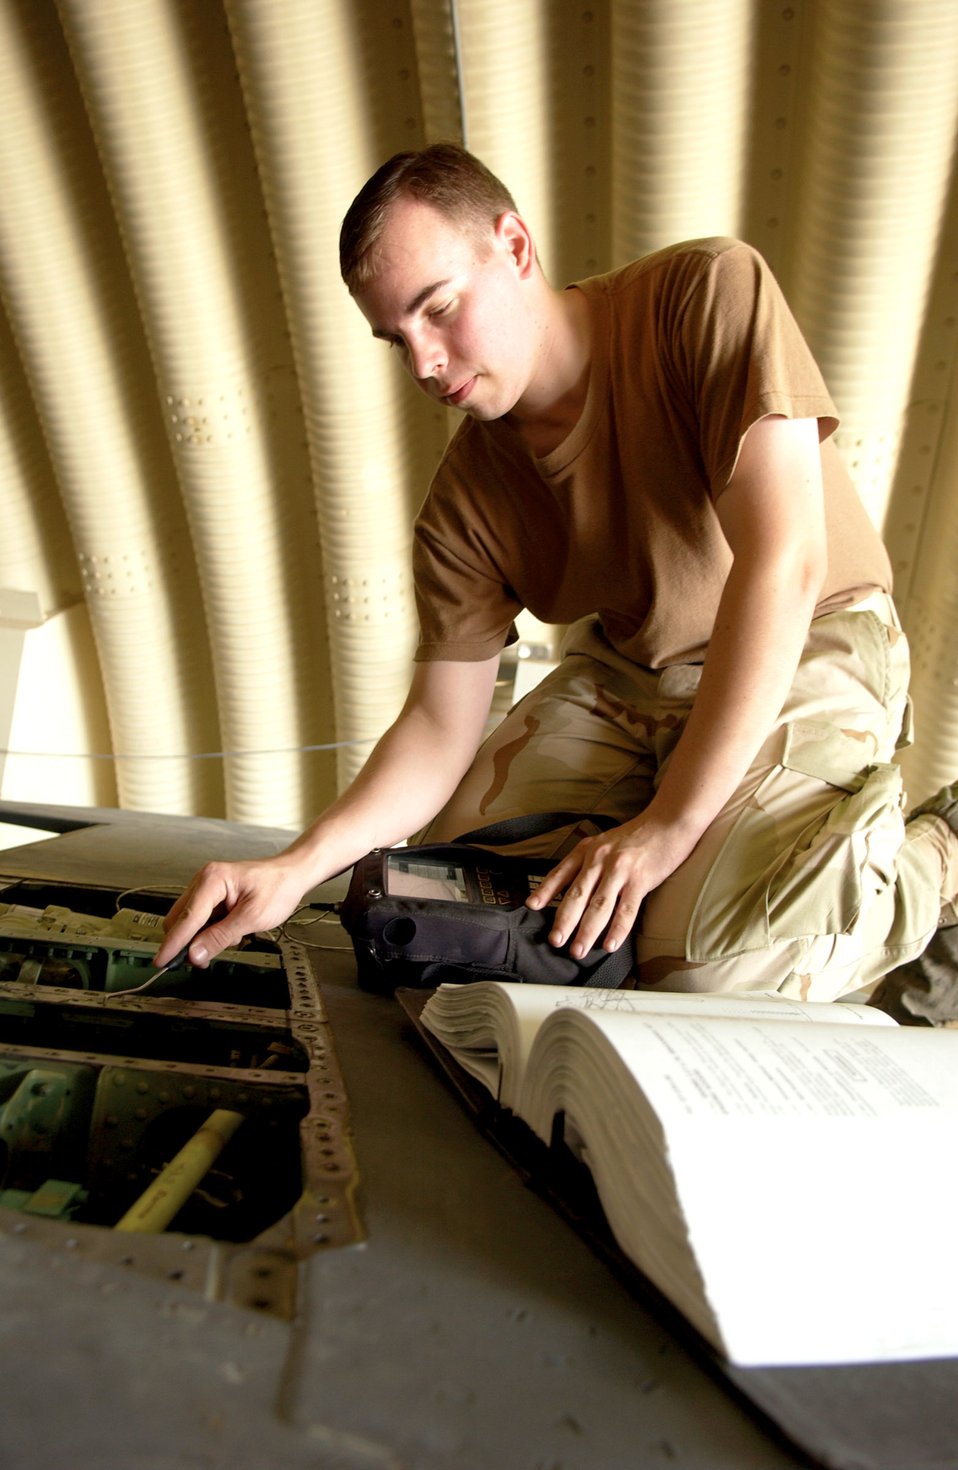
Operation Iraqi Freedom

SOUTHWEST ASIA (AFPN) -- Airman 1st Class Richard Parsons checks for potential flaws on an aircraft using Eddy current. Airman Parsons is deployed here from Royal Air Force Lakenheath, England.